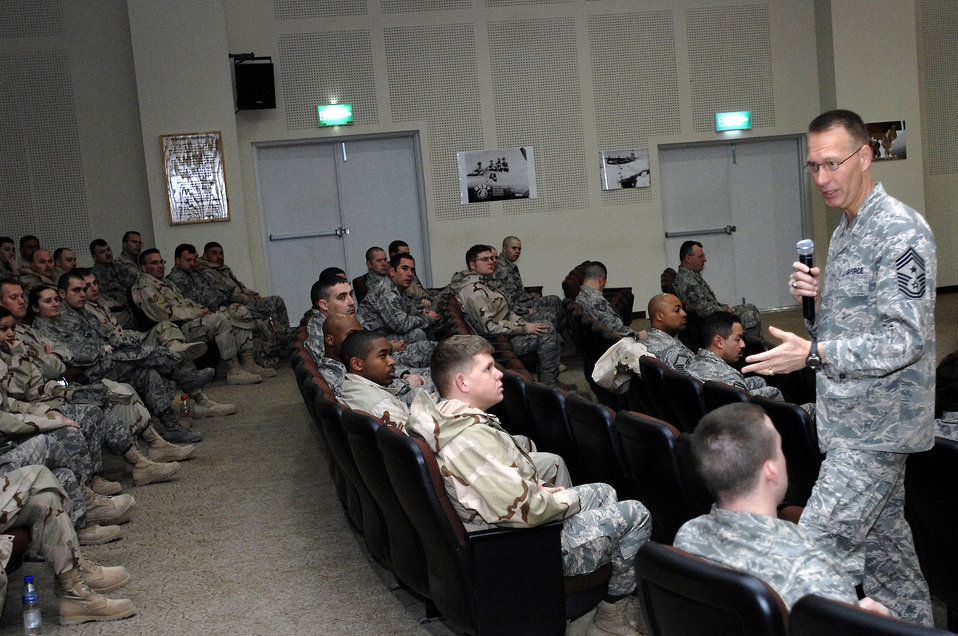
CENTAF's top enlisted Airman discusses war

Chief Master Sgt. Todd Small talks to Airmen deployed to the 386th Air Expeditionary Wing Jan. 24 during an Enlisted Call at a Southwest Asia air base. Chief Small is the 9th Air Force and U.S. Central Command Air Forces command chief master sergeant to the commander at Shaw Air Force Base, S.C.